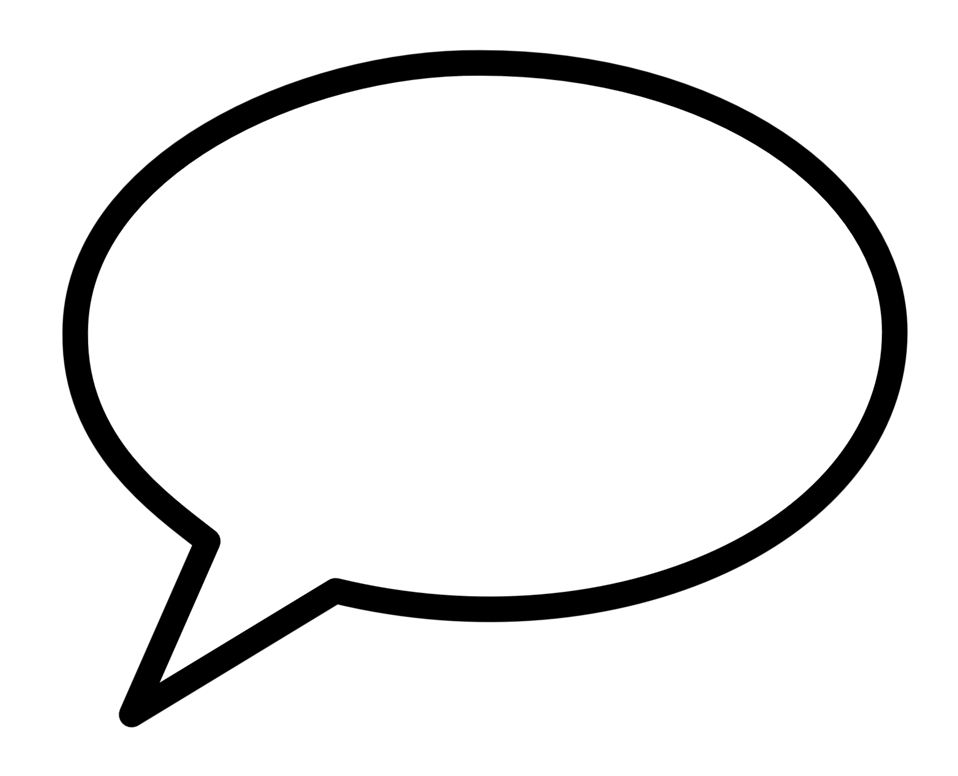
A speech balloon containing Japanese text. Fran√ßais†: Un phylact√®re contenant du texte japonais.